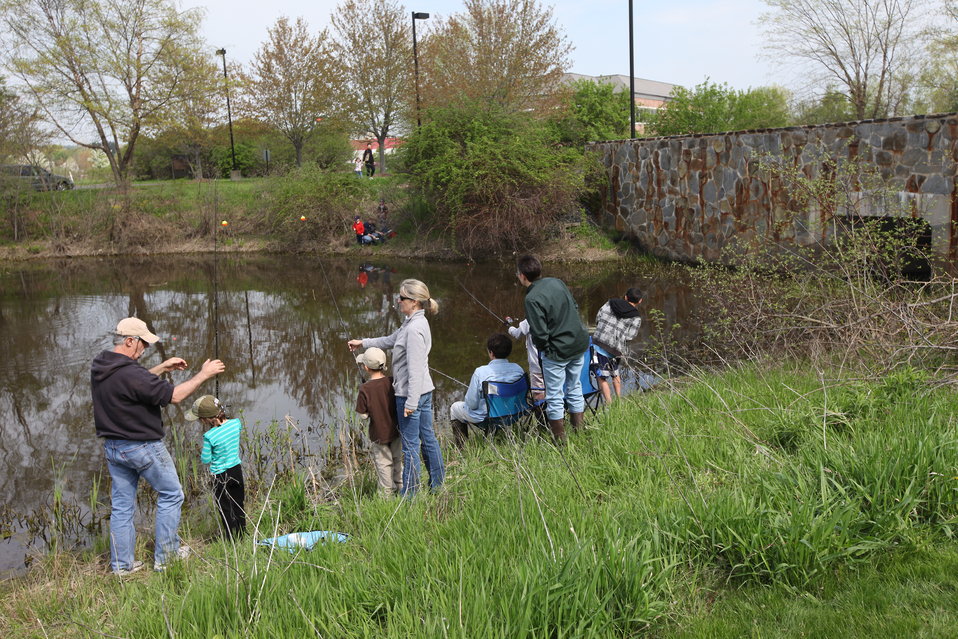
Families fishing

At the USFWS regional office in Hadley, MA, May 7th.